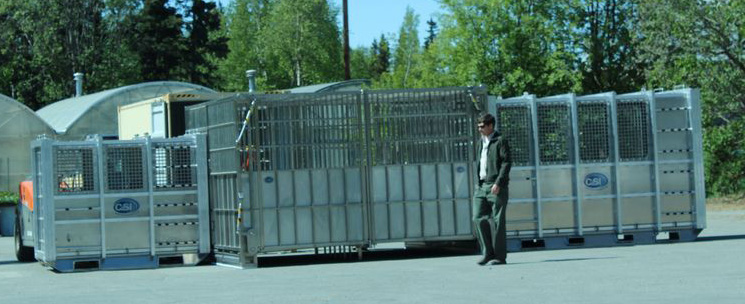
Press Conference on the polar bear holding module. USFWS/Rose Primmer